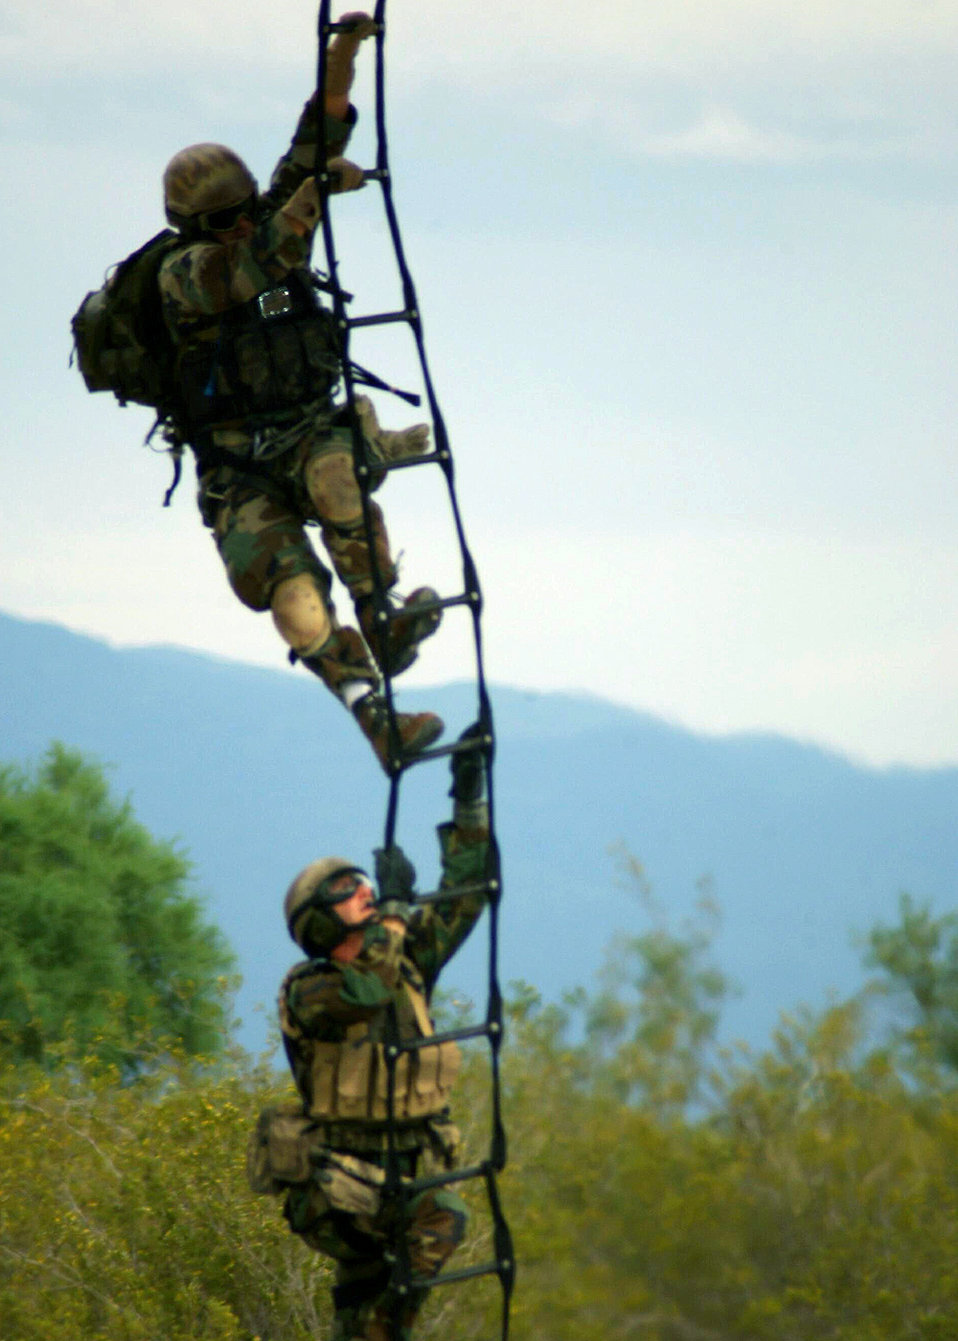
Rescue me!

DAVIS-MONTHAN AIR FORCE BASE, Ariz. -- Pararescuemen from the 48th Rescue Squadron climb up a rope ladder into an HH-60 Pave Hawk during training here Aug. 16.